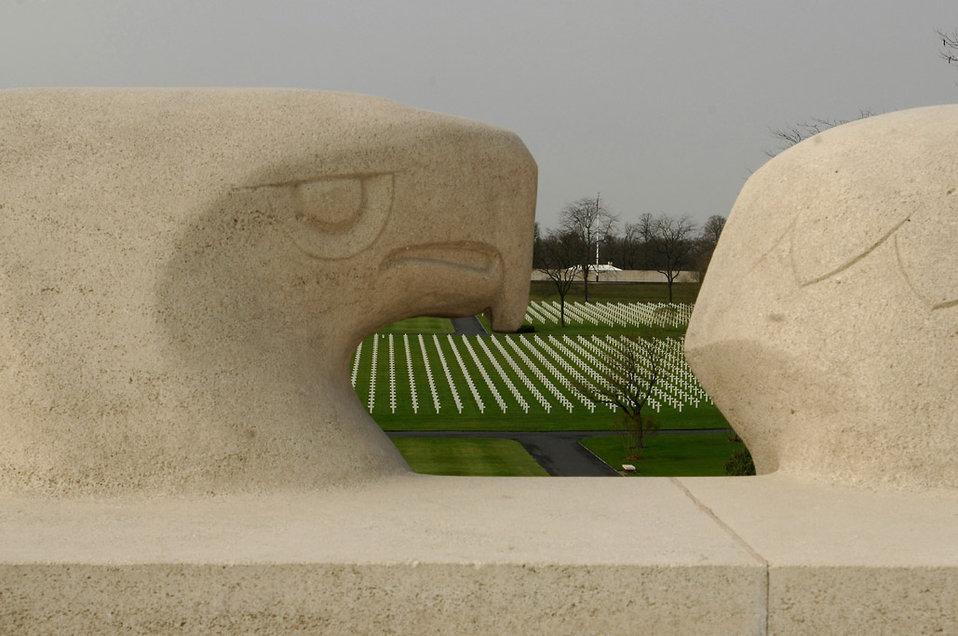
Airmen to visit World War II cemetery on Memorial Day

More than 10,000 Americans are buried at the Lorraine American Cemetery in St. Avold, France, where a memorial service takes place at 11 a.m. May 25.